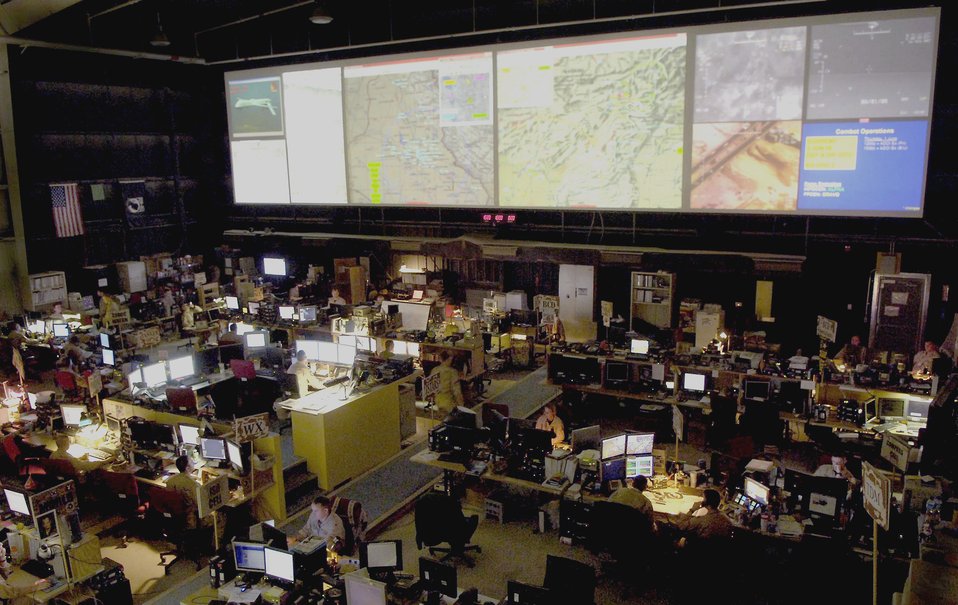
Command and control a 24/7 operation

Liaisons on the